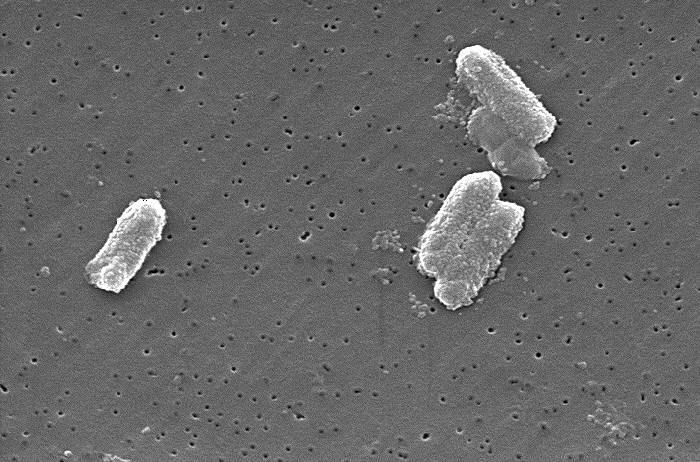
Scanning electron micrograph (SEM) of Gram-negative Citrobacter freundii bacteria,